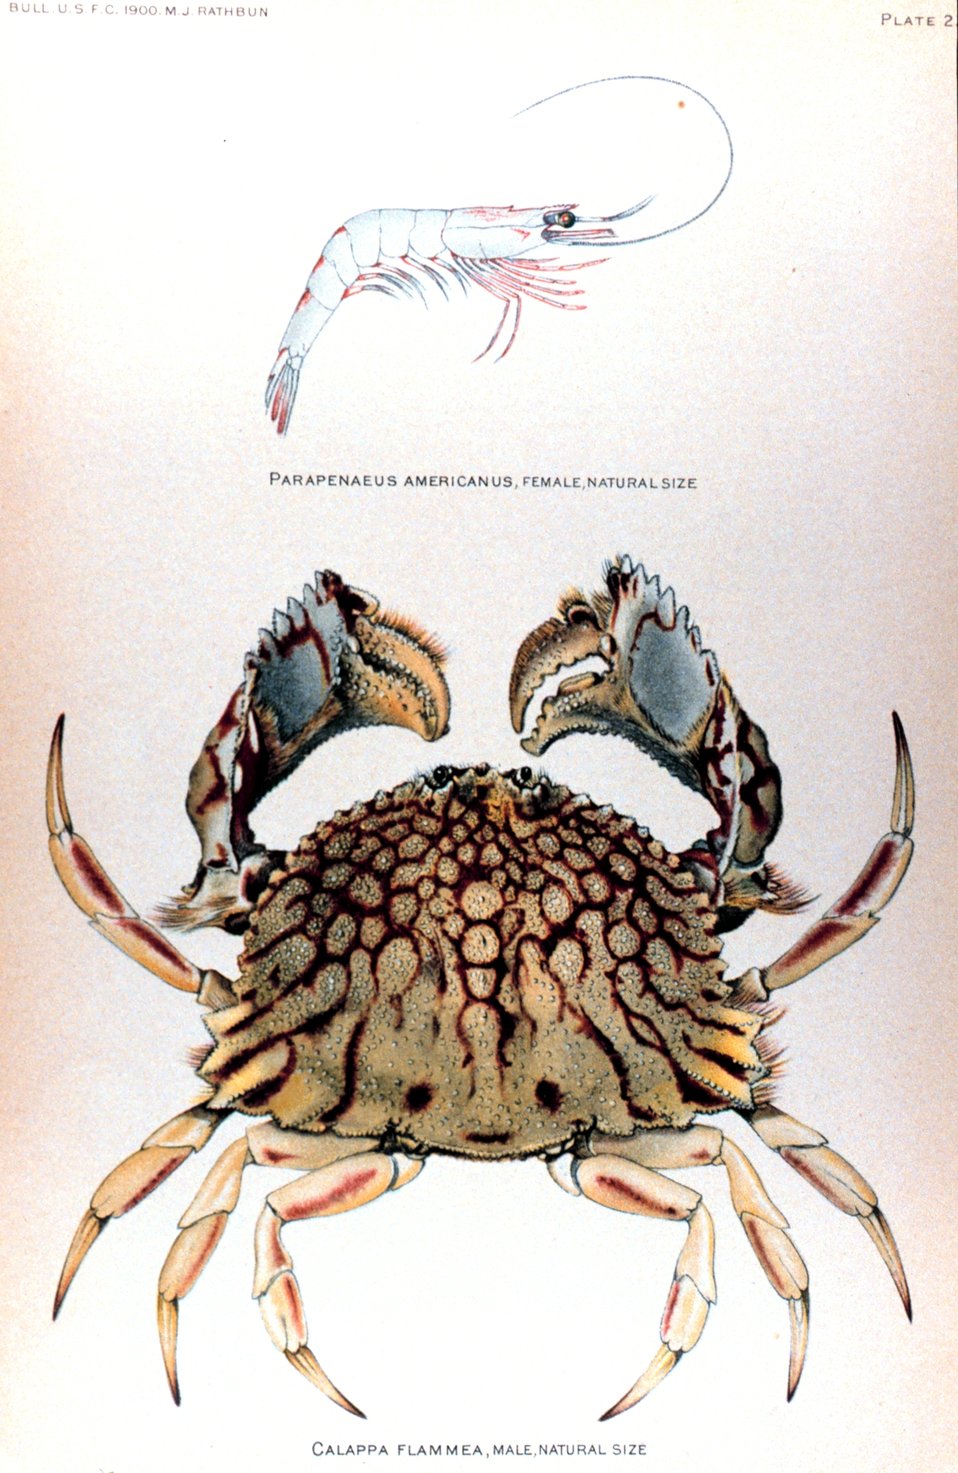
Parapenaeus americanus, female. Calappa flammea, male. In: 'The Brachyura and Macrura of Porto Rico', by Mary J. Rathbun. Bulletin of the United States Fish Commission. Vol. XX. P. 3, Plate II.